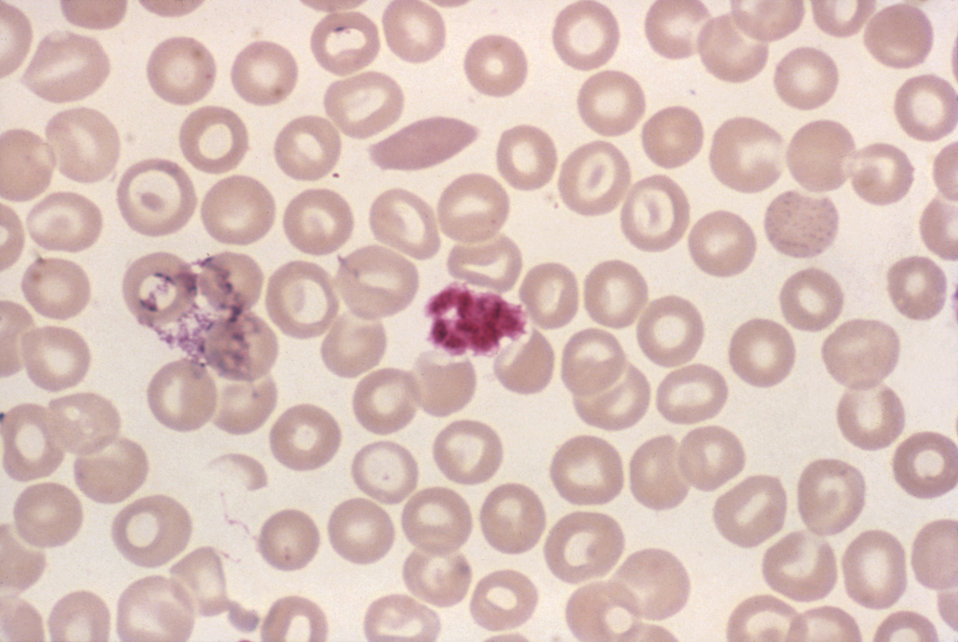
This blood smear micrograph revealed a clump of platelets that resembled a malarial schizont using Giemsa stain, Mag. 1000x.